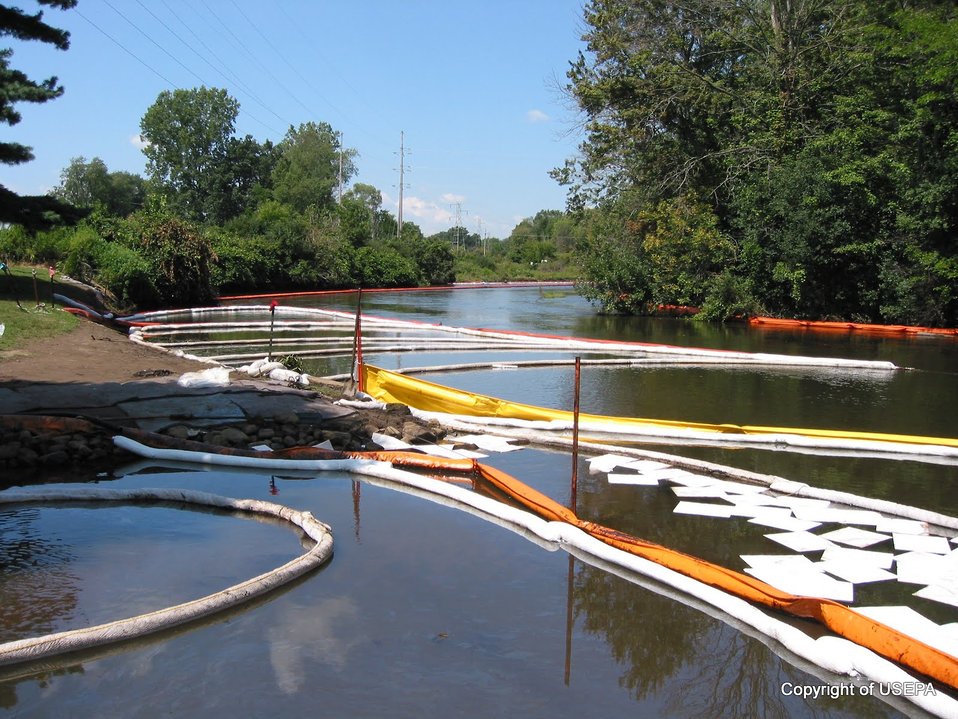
Boom on the River

August 2, 2010 - Containment boom (orange), absorbent boom (white) and absorbent tiles placed at the confluence of the Talmadge River and Kalamazoo River contains the oil and allows it to be absorbed and removed.